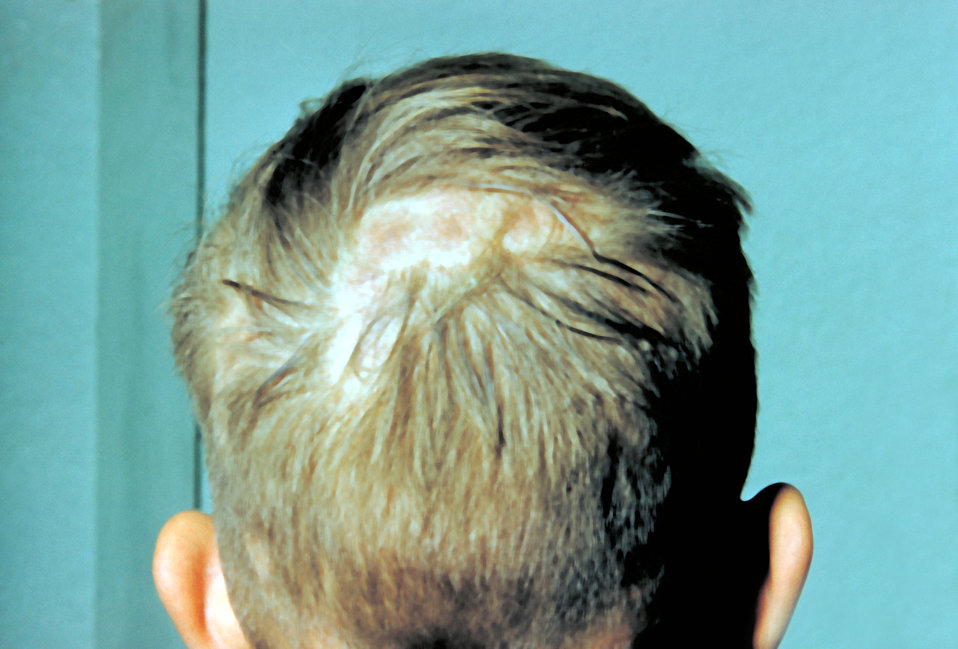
This image shows a patient with ringworm of the scalp, 'tinea capitis', due to an infection caused by Microsporum canis.